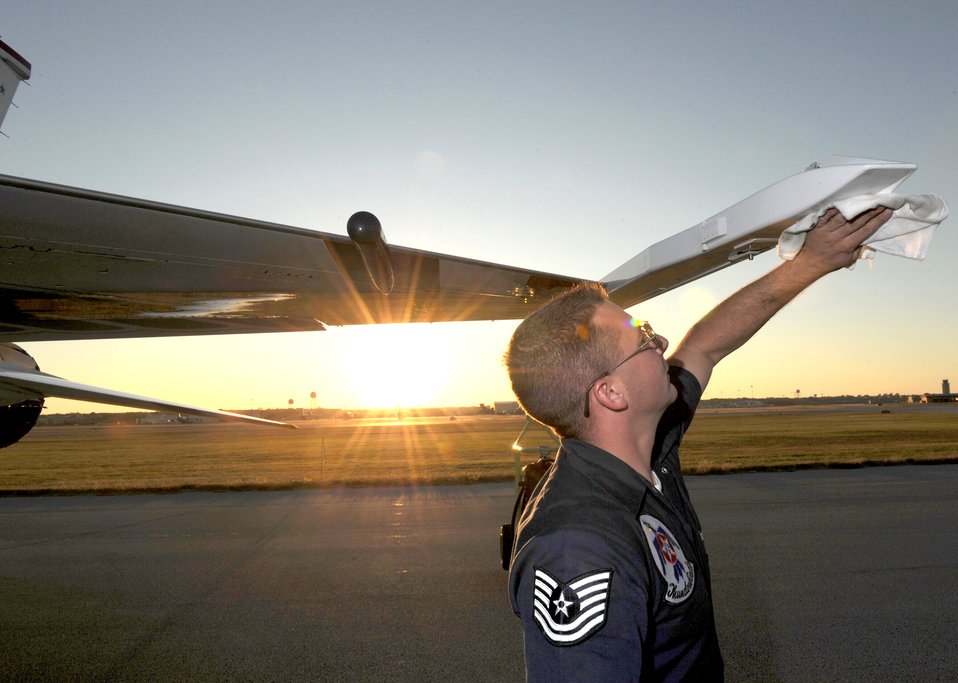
Thunderbirds at Lackland

Tech. Sgt. Andrue Donaldson wipes down the missile rail on his jet following the Thunderbirds aerial demonstration at the AirFest 2010 Nov. 7, 2010, at Lackland Air Force Base, Texas. Sergeant Donaldson is a Thunderbird crew chief.